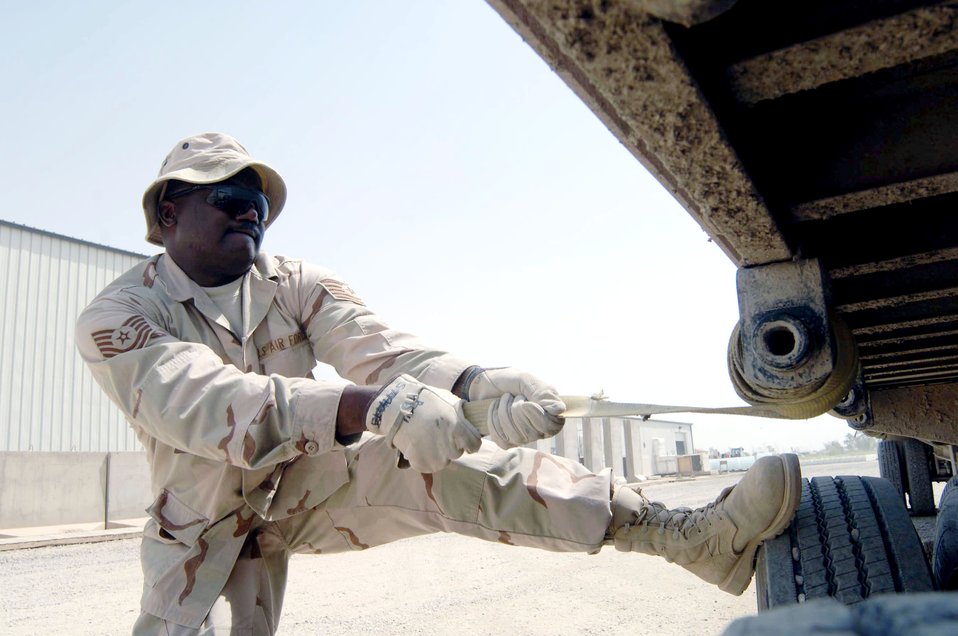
Drink up: Tigris River is life for troops in Baghdad

Tech. Sgt. Raymond Ford attempts to loosen a tie-down strap used for securing palletized water for transport from Camp Liberty to Sather Air Base, Iraq. Sergeant Ford is assigned to the 447th Expeditionary Logistics Readiness Squadron.